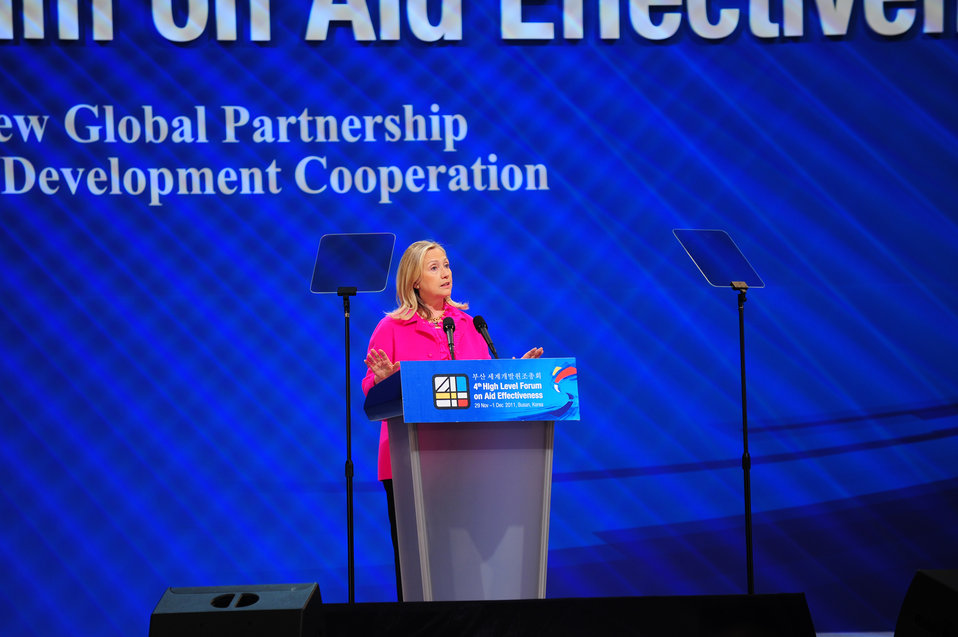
Secretary Clinton Delivers a Keynote Address

U.S. Secretary of State Hillary Rodham Clinton delivers a keynote address at the opening ceremony of the Fourth High-Level Forum on Aid Effectiveness (HLF4) in Busan, South Korea, on November 30, 2011.